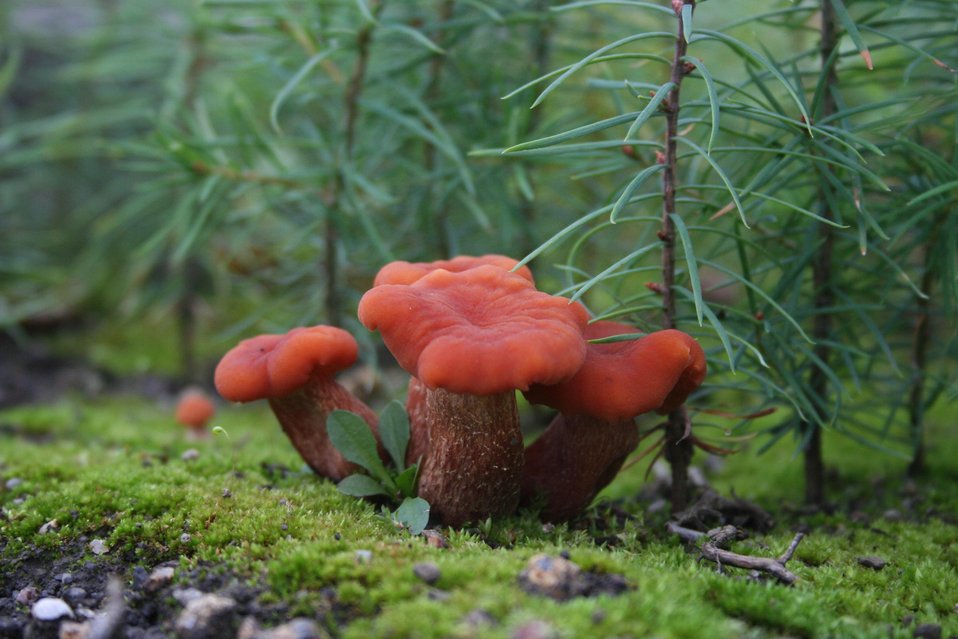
SHOWN IS THE LACCARIA BICOLOR FUNGUS.

IT HAS BEEN DETERMINE BY THE JOINT GENOME INSTITUTE THAT THE DNA SEQUENCE OF THE LACCARIA BICOLOR, IS A FUNGUS THAT FORMS A BENEFICIAL CONNECTION WITH TREES AND INHABITS ONE OF THE MOST ECOLOGICALLY AND COMMERCIALLY IMPORTANT MICROBIAL NICHES IN NORTH AMERICAN AND EURASIAN FORESTS. THE SEQUENCE WILL PROVIDE THE GLOBAL RESEARCH COMMUNITY WITH A CRITICAL RESOURCE TO DEVELOP FASTER GROWING TREES FOR PRODUCING MORE BIOMASS THAT CAN BE CONVERTED TO FUELS AND FOR TREES CAPABLE OF CAPTURING MORE CARBON FROM THE ATMOSPHERE.